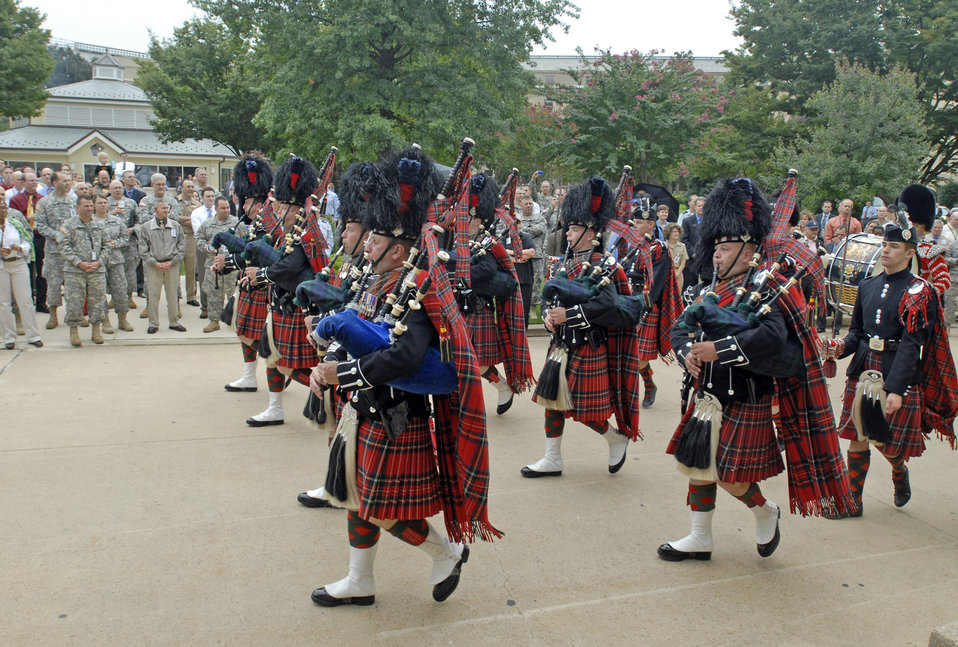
British band performs in Pentagon courtyard

The British Army Pipes and Drums of the 1st Battalion Scots Guard performs for employees, servicemembers and families Sept. 25, 2009, at the Pentagon. The band that consists of infantry soldiers performed for its closet allies prior to a Helmand Province deployment next spring.